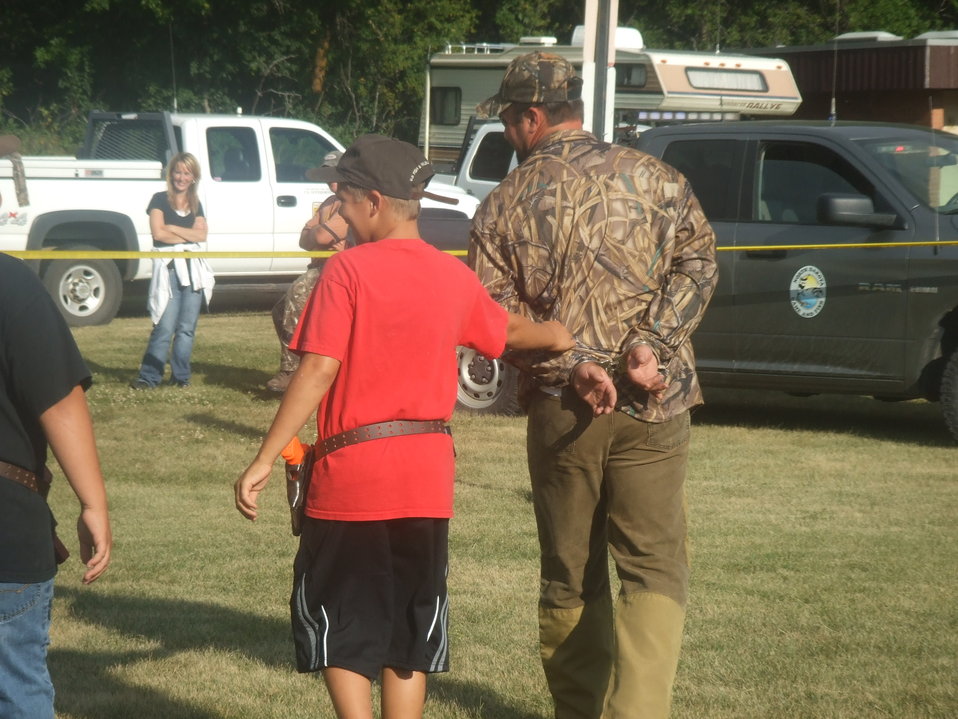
2011 Greenwing Day - Game Warden scenario session

Des Lacs National Wildlife Refuge, Tasker's Coulee